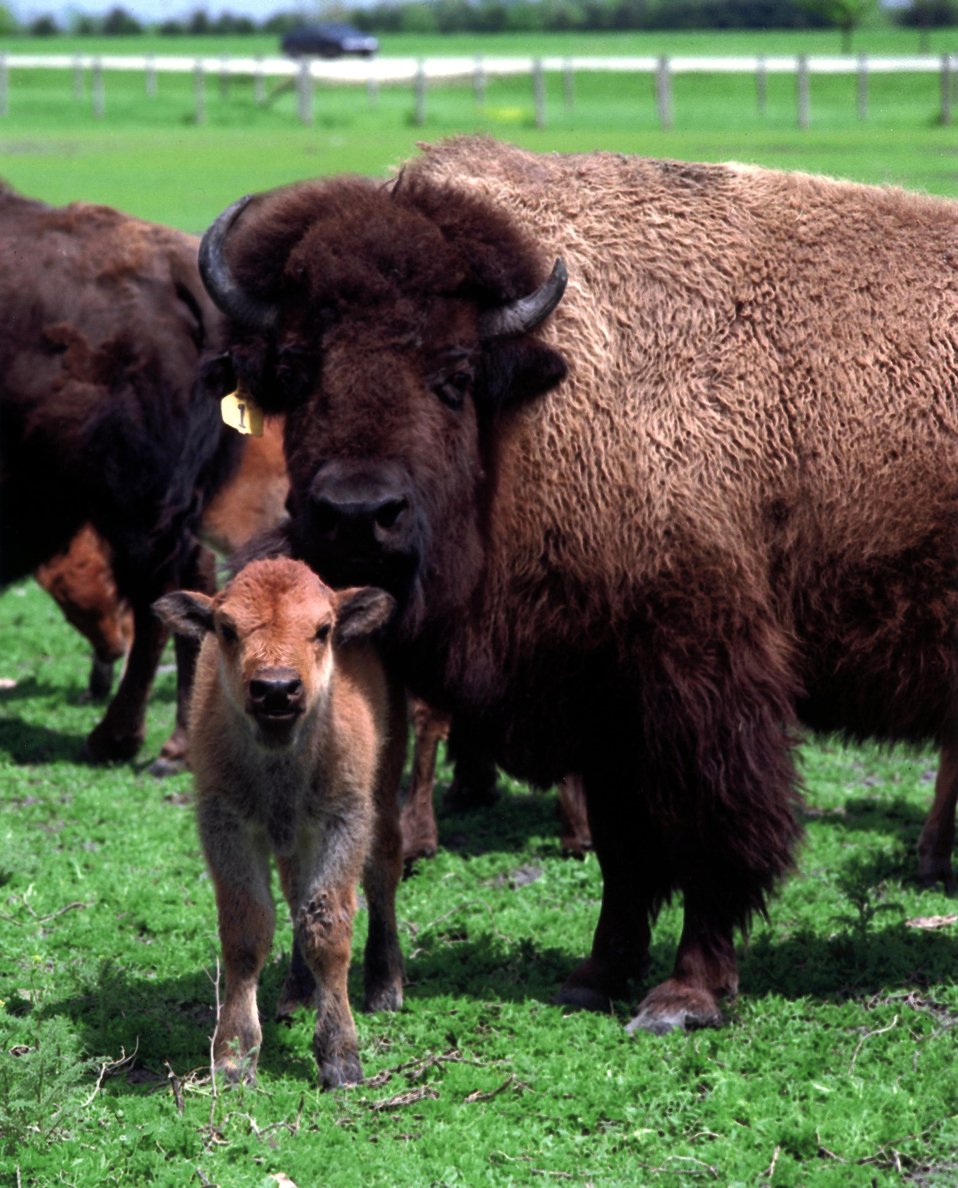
A HERD OF BISON AT THE FERMI NATIONAL ACCELERATOR LABORATORY SITE.

THE FIRST AMERICAN BISON, A BULL AND FOUR COWS, WERE BROUGHT IN 1969 TO FERMILAB BY THE LABORATORY'S FIRST DIRECTOR, ROBERT WILSON. HE DID THIS IN AN EFFORT TO RECOGNIZE FERMILAB'S PRAIRIE HERITAGE. IN 1971, THE ILLINOIS DEPARTMENT OF CONSERVATION ADDED 21 MORE BISON. THE CURRENT HERD FOUND ON THE LABORATORY SITE ARE DESCENDANTS OF THOSE FIRST ANIMALS.